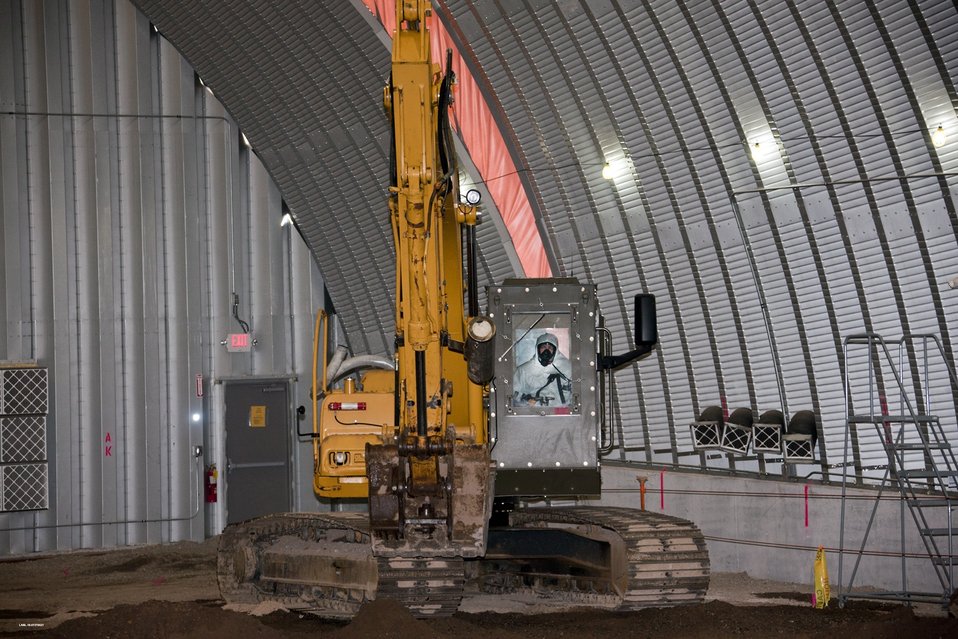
Cautious Recovery Act Excavation Cleans Up 1940s Los Alamos Waste Disposal Site

At Los Alamos National Laboratory, $94 million in Recovery Act funding is being used to clean up the Lab’s oldest waste disposal site, Material Disposal Area B (MDA-B), which was used from 1944 to 1948.